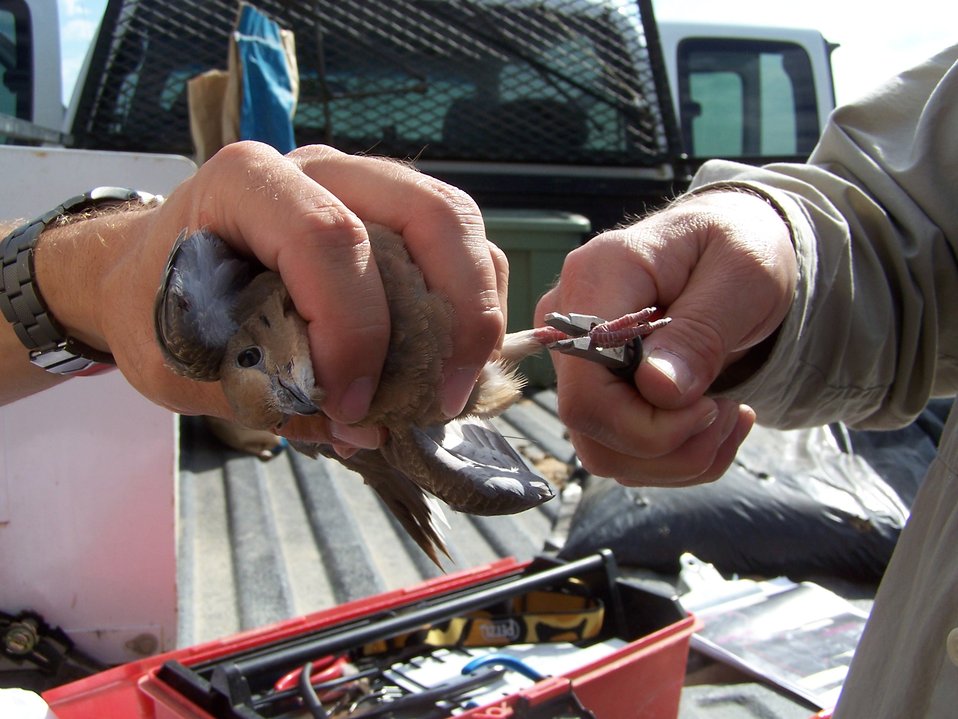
Banding of a Mourning Dove

A mourning dove waits patiently in the hand while a band is gently placed on its leg at Bowdoin NWR.